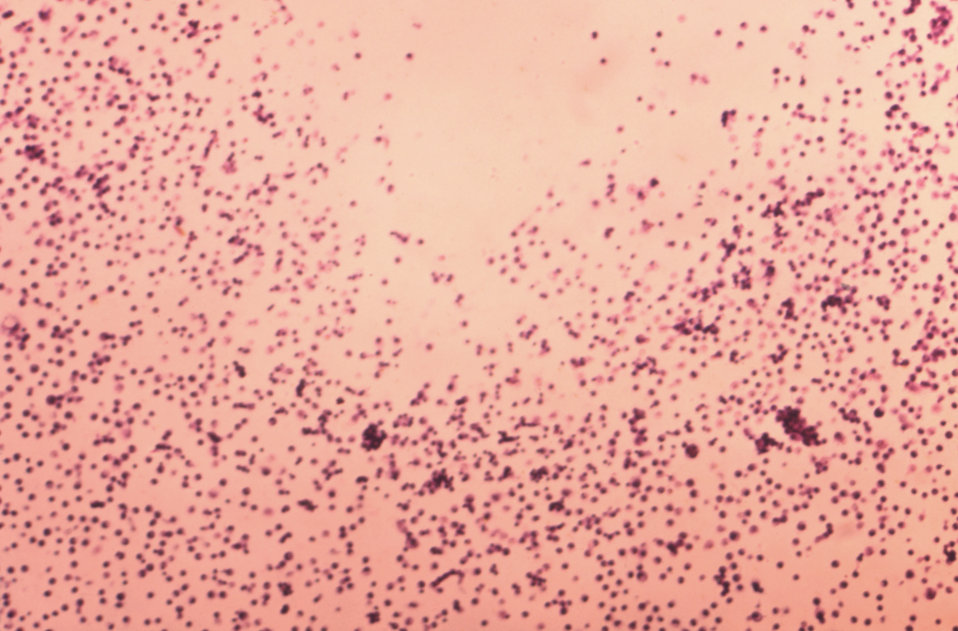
This photomicrograph is the first in a series of three images depicting the cellular content of a peritoneal exudate extracted from the abdominal cavity of a guinea pig. The prevalent cell type is represented by numerous white blood cells (WBCs) of the polymorphonuclear type (PMNs). Of the three images, this one was captured under the lowest, though unknown, magnification. See PHIL 15444, and 15445, for the other two images in this series, each viewed under successively-greater magnifications.